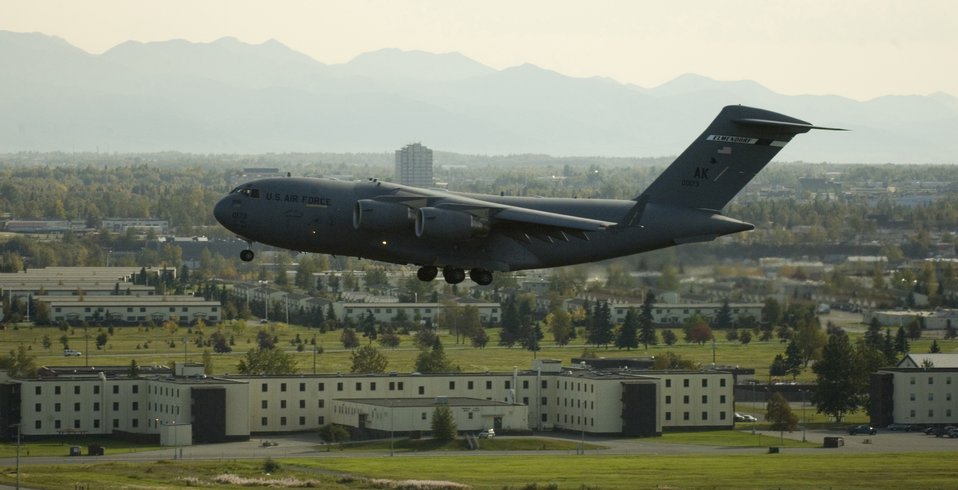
On Final

The Spirit of the Aleutians, the newest C-17 Globemaster III to join the fleet at Elmendorf Air Force Base, Alaska, prepares to land at the base after a mission Sept. 17.